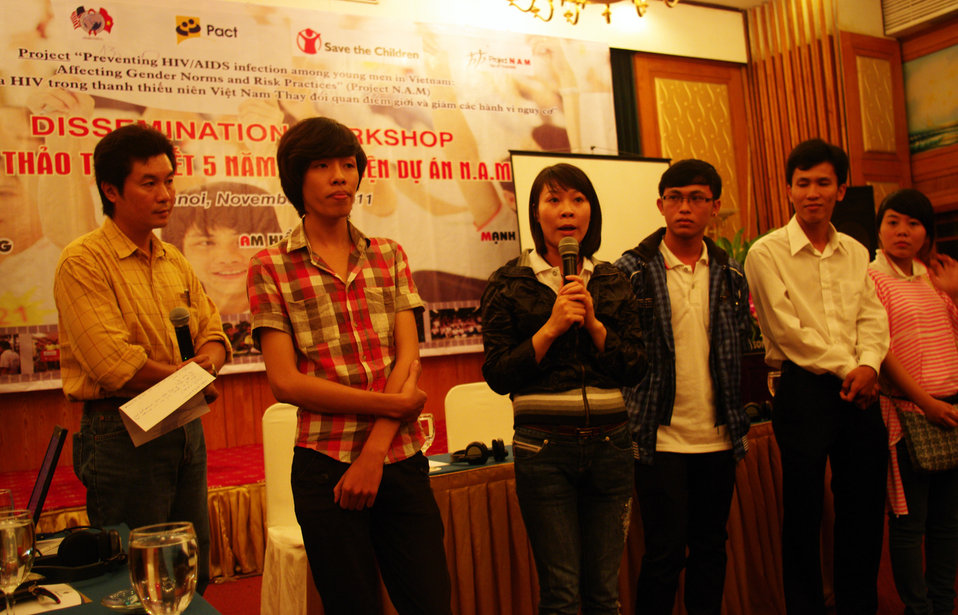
USAID Supports HIV Awareness among Street Youth and Young Men

Trainers and peer educators tell their stories on November 29, 2011, in Hanoi, Vietnam